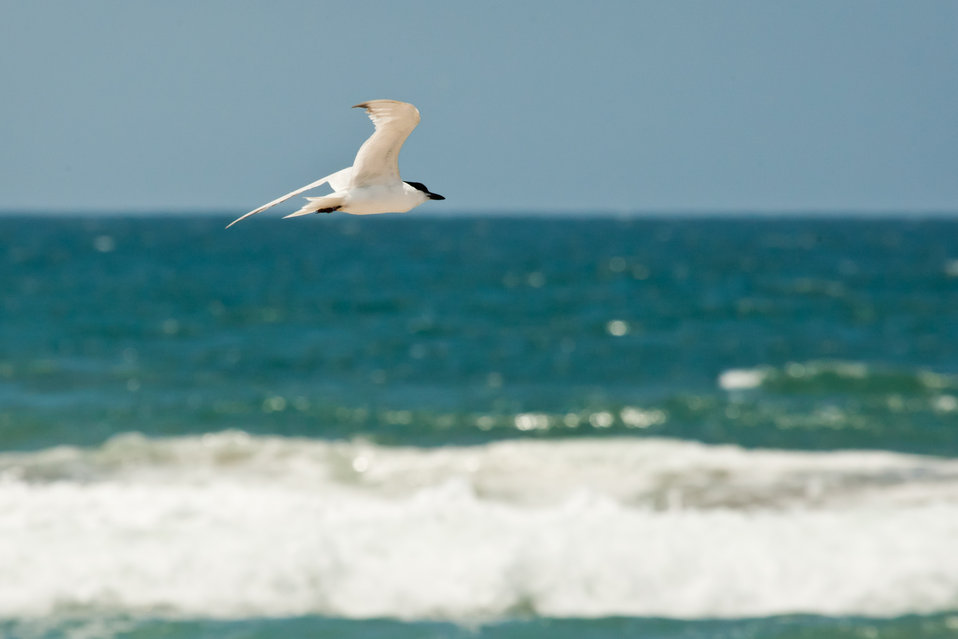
Gull-billed tern

Tijuana Slough National Wildlife Refuge.